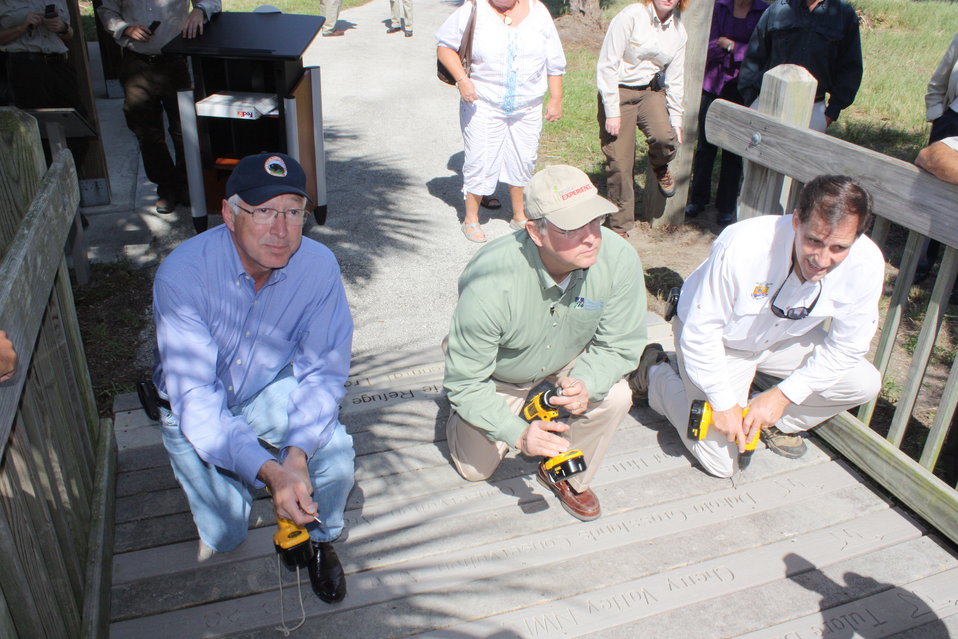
Secretary Salazar, Ducks Unlimited Chairman John Pope, and Director Dan Ashe

Secretary of the Interior Ken Salazar, from left, Ducks Unlimited Chairman John Pope and U.S. Fish and Wildlife Service Director Dan Ashe put a plank with the name of Dakota Grassland Conservation Area on the Centennial Trail Boardwalk at Pelican Island National Wildlife Refuge.